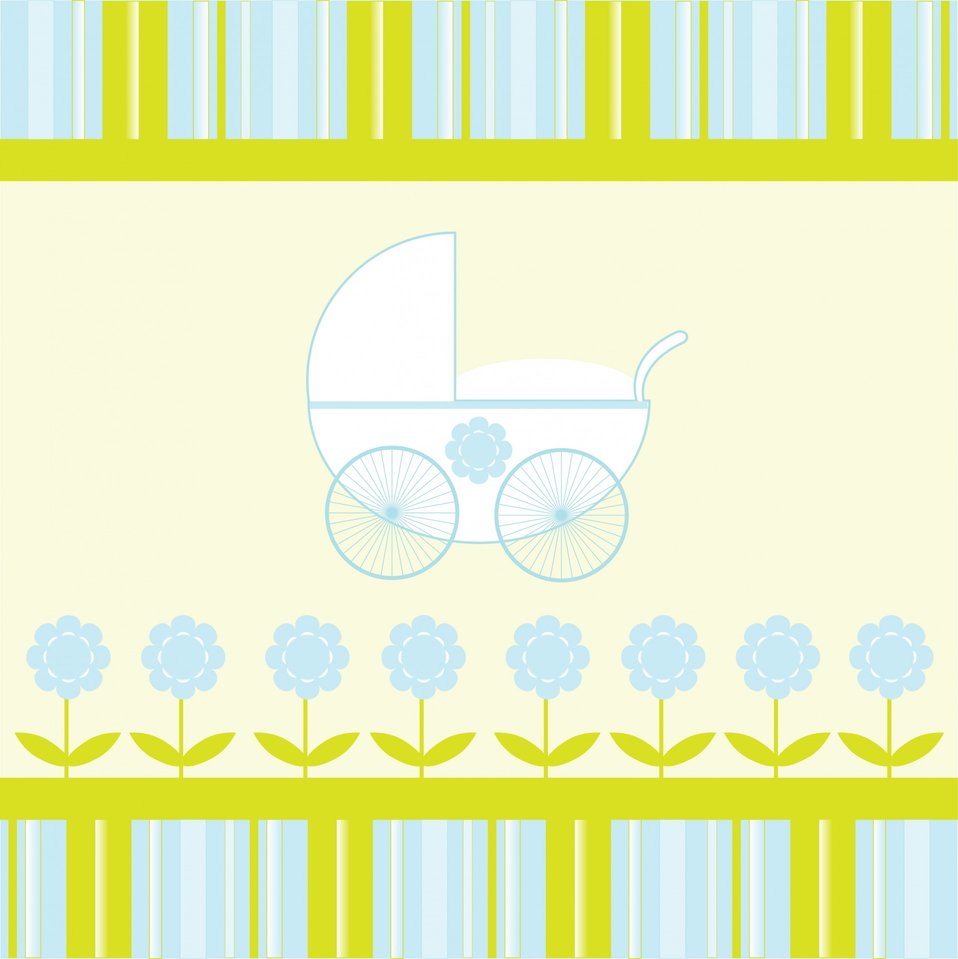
Baby boy stroller background

Blue and green stripes baby stroller background card template.